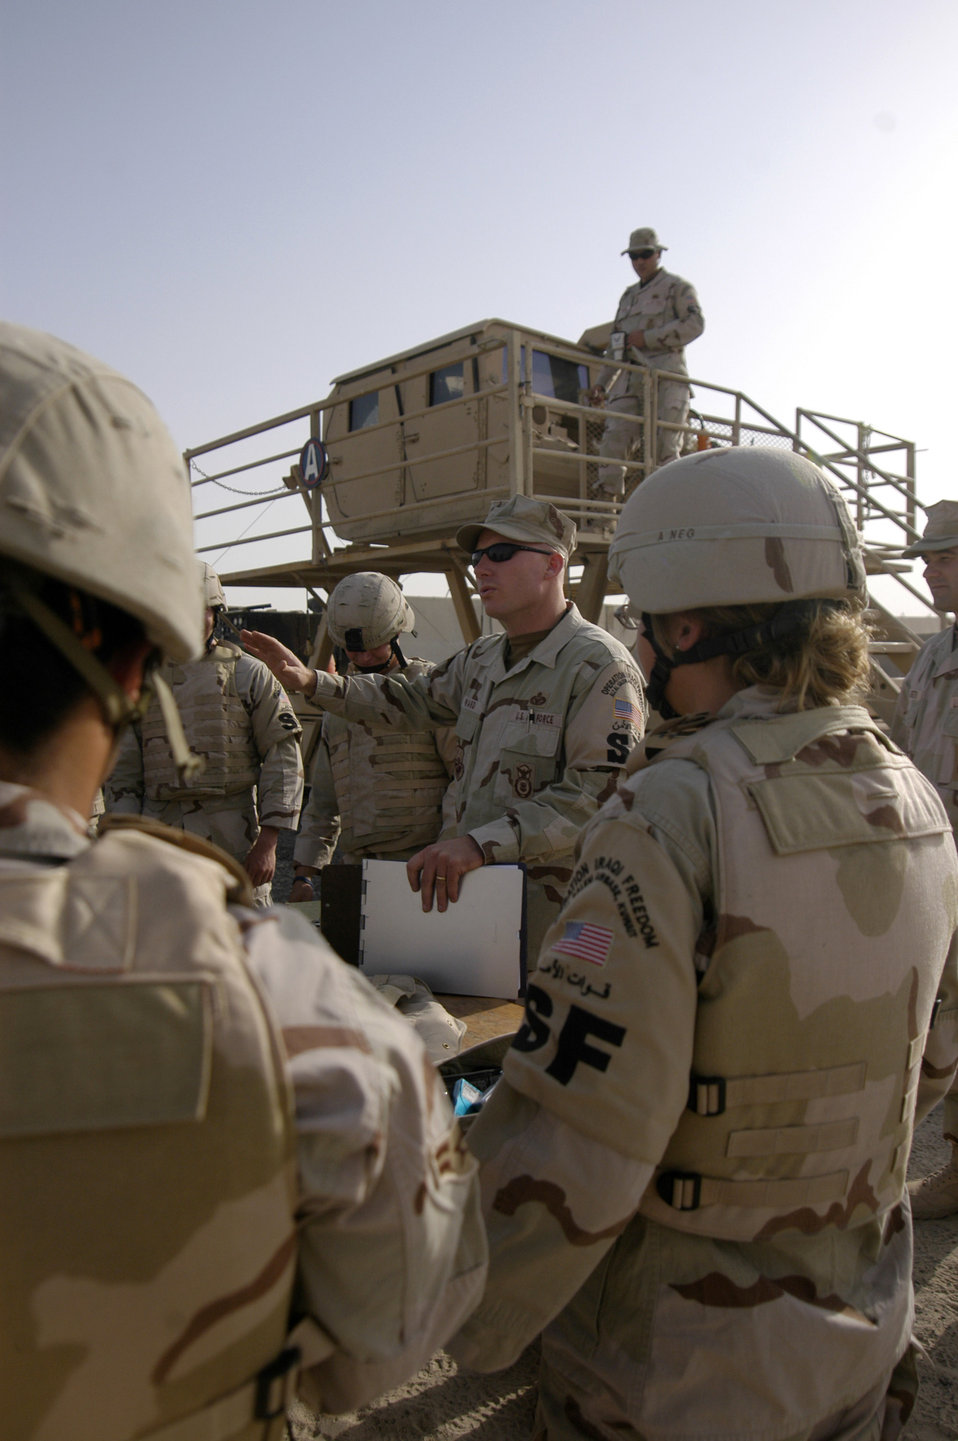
Security forces members battle HEAT

Master Sgt. John Ward instructs Airmen before they enter the Humvee egress assistance trainer July 17 at a forward operating base in Southwest Asia. The trainer aids military members with instruction on how to escape from a Humvee that has rolled over and how to avoid such accidents. Sergeant Ward is the NCO in charge of training for the 386th Expeditionary Security Forces Squadron.